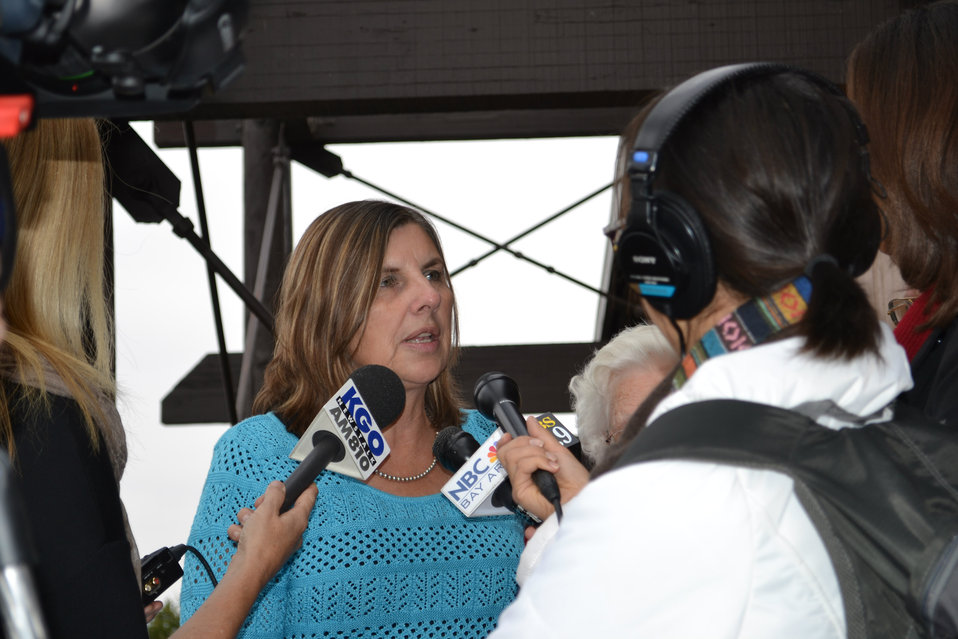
Cay Goude & media TMRP,11-14-13

Photo Credit: Doug Cordell/USFWS

Cay Goude, Assistant Field Supervisor, USFWS, Sacramento Field Office explains the benefits of the plan.

The U.S. Fish and Wildlife Service was joined by the California Department of Fish and Wildlife, the Coastal Conservancy, and many other environmental organizations active in the Bay Area to celebrate the finalization of the Recovery Plan for Tidal Marsh Ecosystems in Northern and Central California.